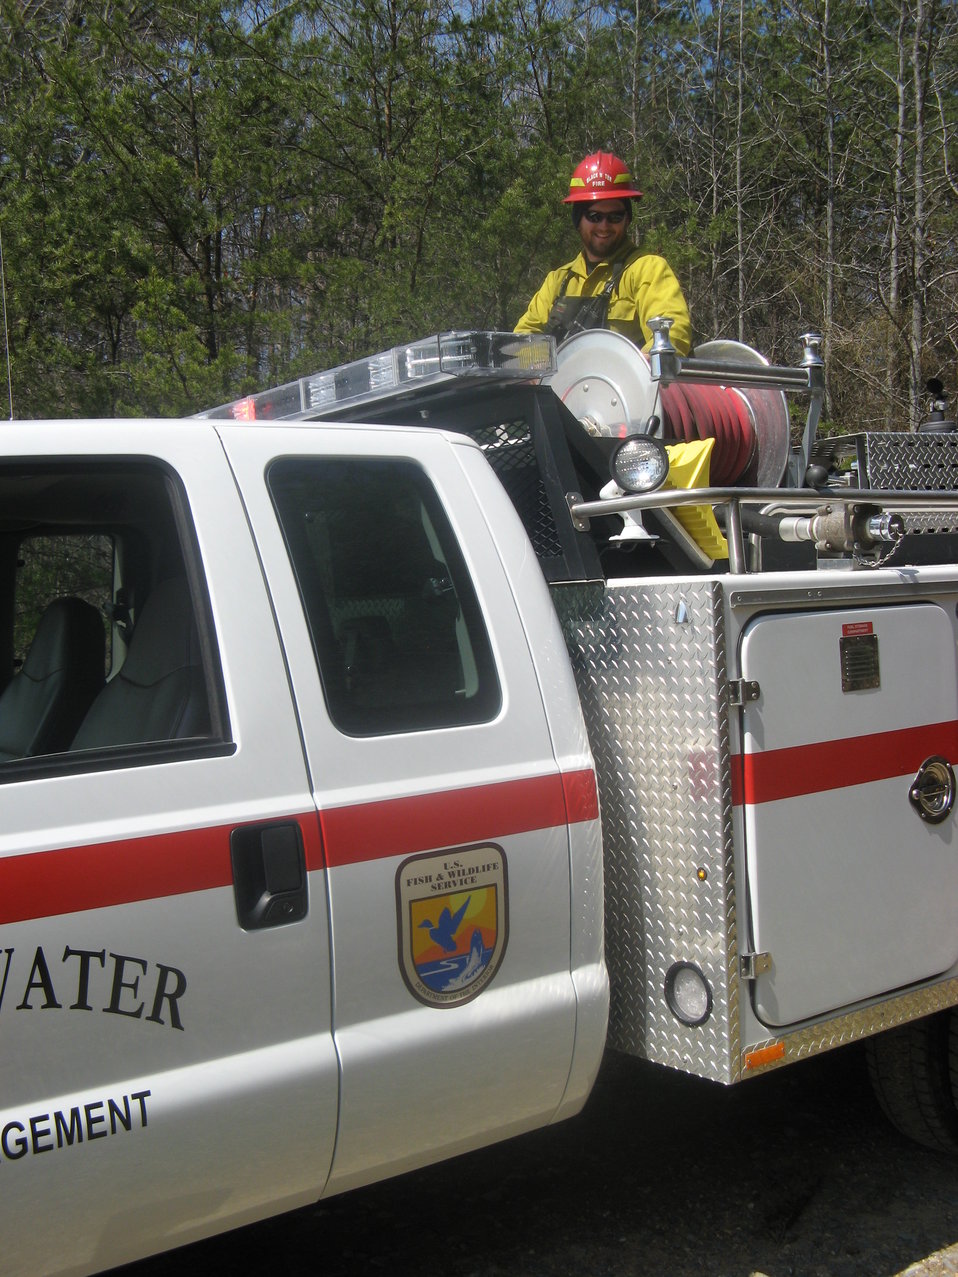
Blackwater National Wildlife Refuge engine

Laurel, MD: Firefighters and equipment from Blackwater National Wildlife Refuge helped with a controlled burn at Patuxent National Research Refuge.